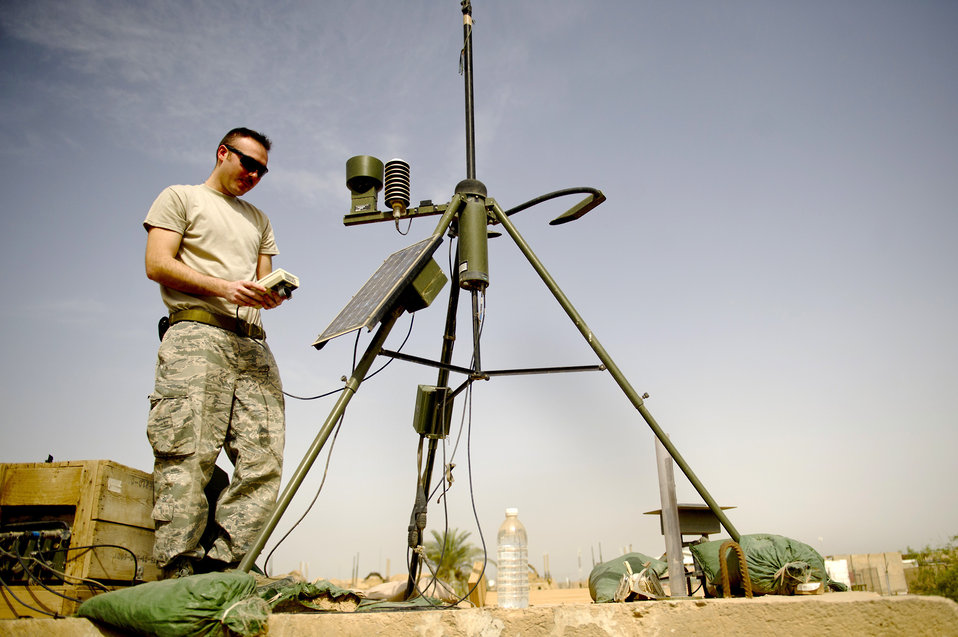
Checking it out

Senior Airman Dustin Clarke conducts a daily operations check on a weather-monitoring station May 6, 2011, in Iraq. Airman Clarke is assigned to the 22nd Expeditionary Weather Squadron.